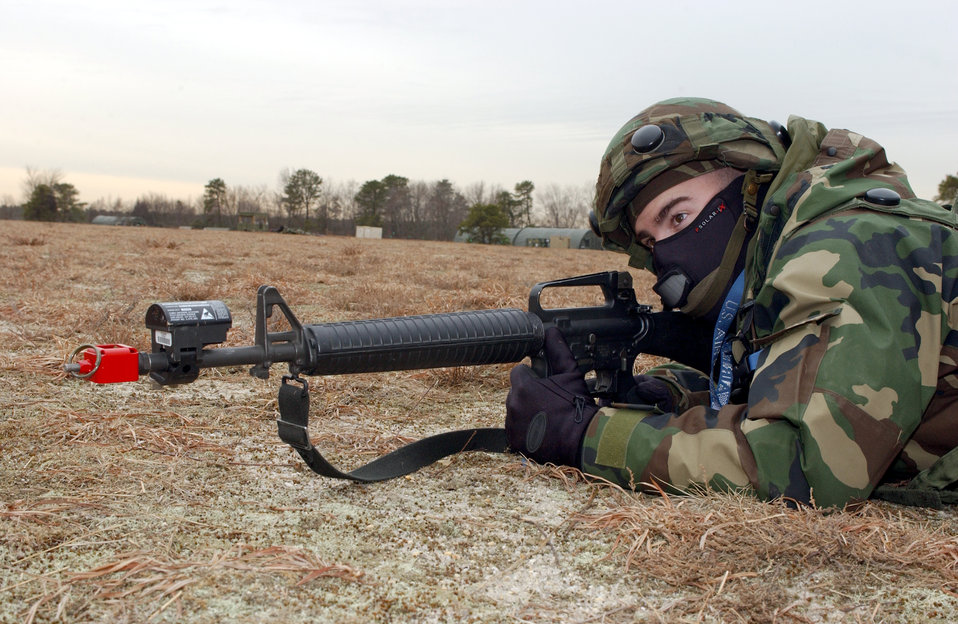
Eagle Flag

LAKEHURST NAVAL AIR STATION, N.J. -- Staff Sgt. Kris Drovencher keeps an eye on the camp's perimeter during Exercise Eagle Flag on Feb. 24. Sergeant Drovencher is from the 621st Air Mobility Operation Group at McGuire Air Force Base, N.J. Eagle Flag is a 12-day field training exercise involving over 400 participants aligned with Air Expeditionary Force rotations to provide training for combat support forces.